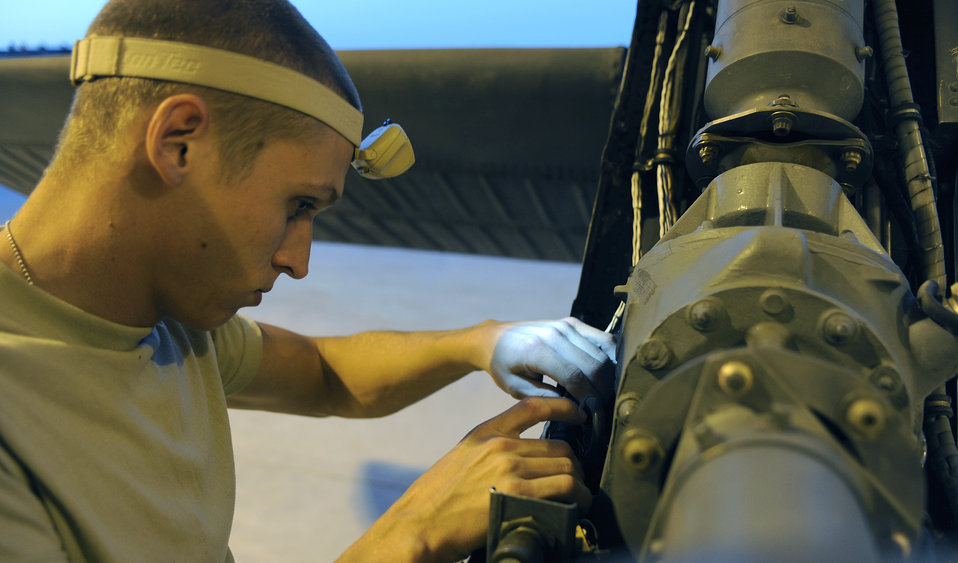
Helicopters fly regardless of the uniform of the crew

Airman 1st Class Anthony Phillipp inspects the tail of an HH-60 Pave Hawk April 18, 2011, at Kandahar Airfield, Afghanistan. The inspection was part of a 300-hour routine analysis of the aircraft. Airman Phillipp is a crew chief assigned to the 55th Expeditionary Helicopter Maintenance Unit.